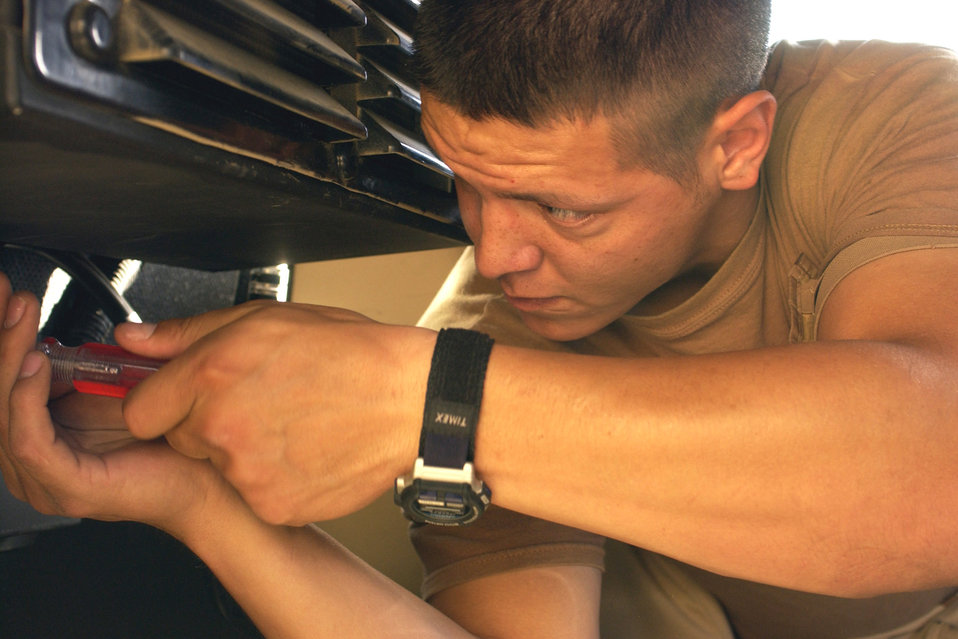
HUMVEE hookup

SOUTHWEST ASIA (AFPN) -- Airman 1st Class Leland Driggs installs a vehicle radio system in an armored HUMVEE for the 386th Expeditionary Explosive Ordinance Detachment here. Airman Driggs is a ground radio maintenance technician deployed from the 3rd Communications Squadron at Elmendorf Air Force Base, Alaska.